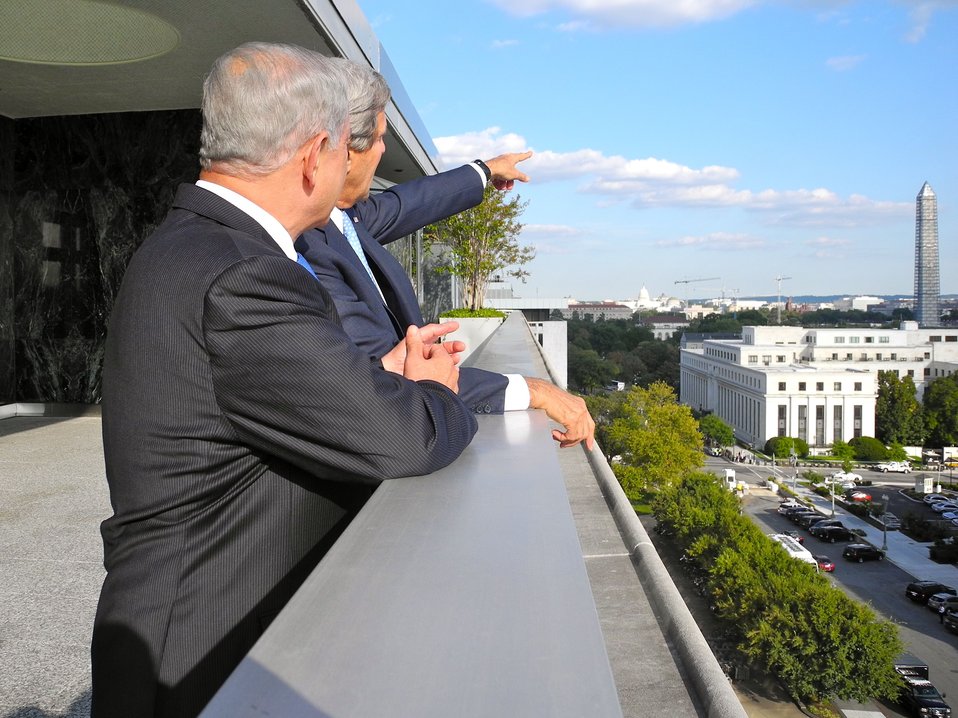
Secretary Kerry Shows Israeli Prime Minister Netanyahu the View From the Terrace

U.S. Secretary of State John Kerry shows Israeli Prime Minister Benjamin Netanyahu the view from the terrace of the State Department after their meeting in Washington, D.C., on September 30, 2013.